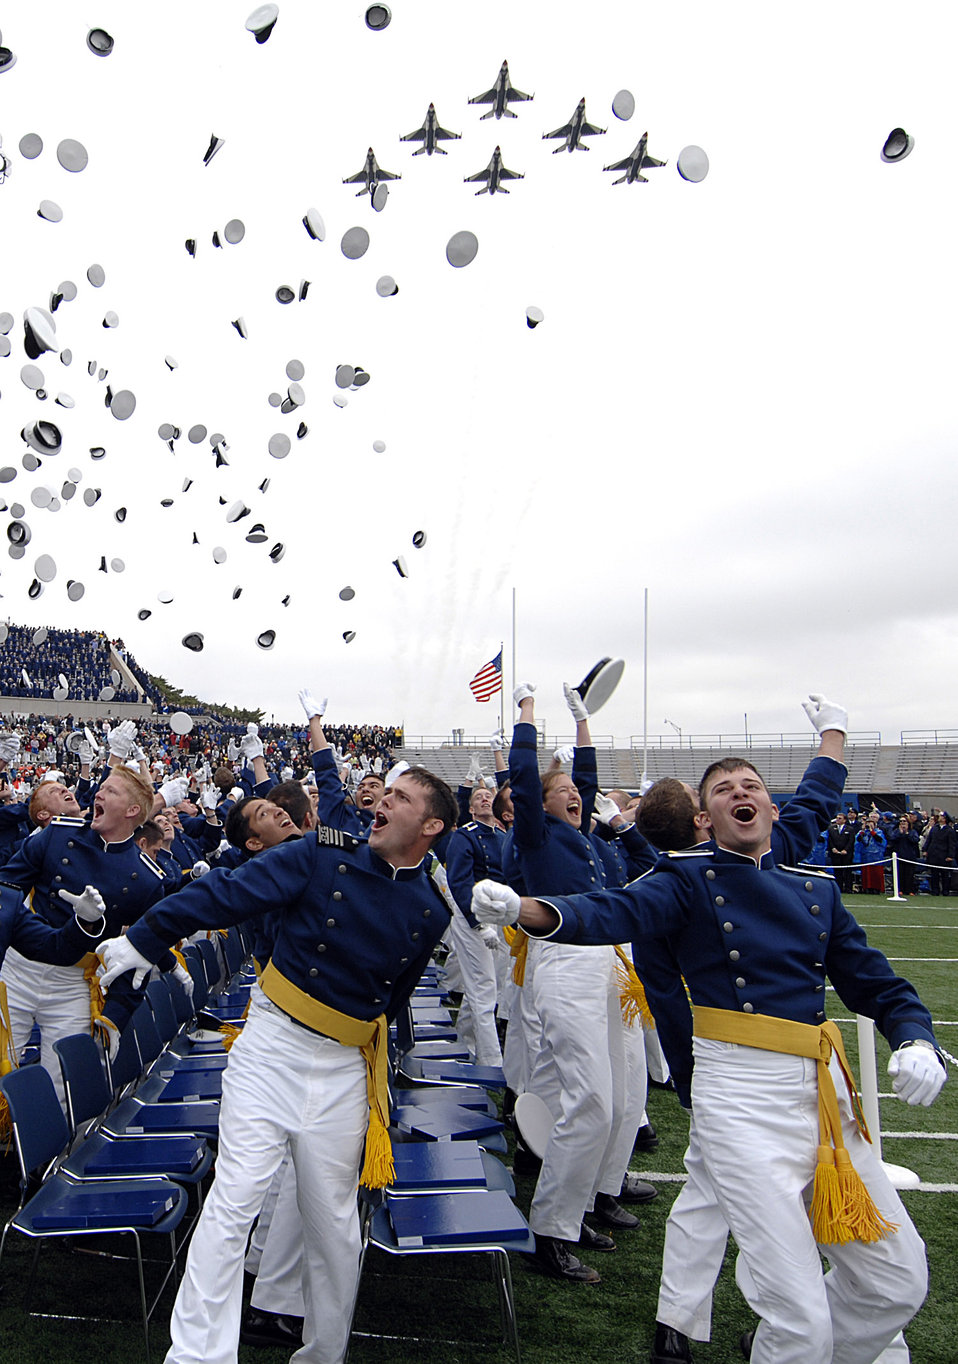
Academy Class of 2008 graduates

The Air Force Thunderbirds fly over the U.S. Air Force Academy's Falcon Stadium as 1012 newly graduated second lieutenants, members of the Class of 2008, toss their hats in the air at the conclusion of graduation ceremonies. President George W. Bush was the commencement speaker.